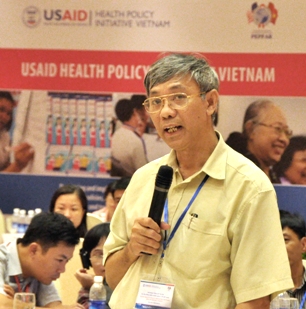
USAID Health Policy Initiative End of Project Workshop

Hanoi, August 14, 2013.